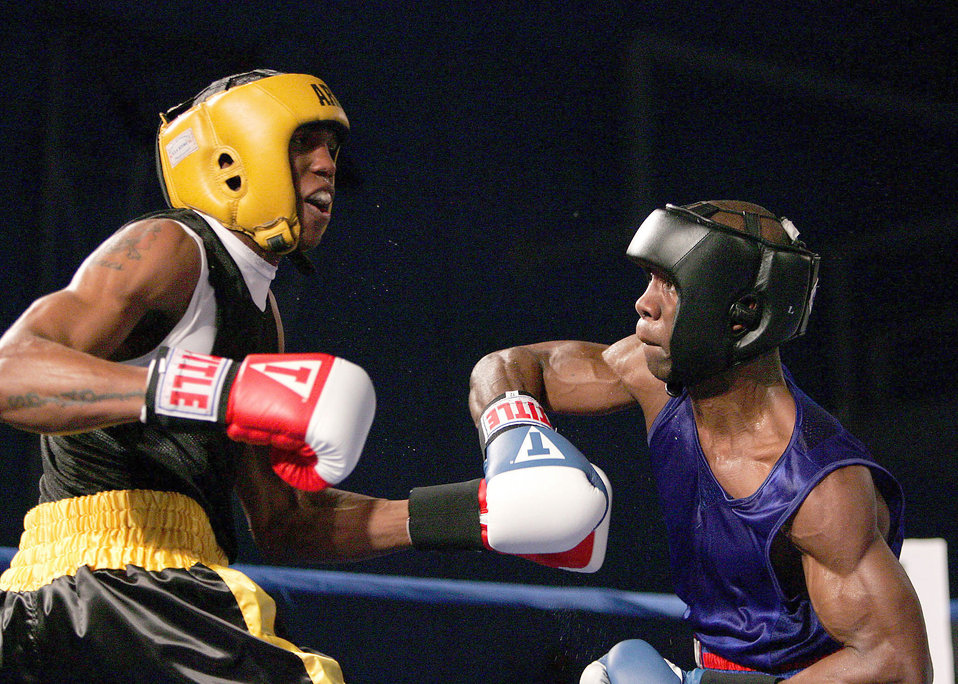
Armed Forces Boxing Championships

Army Spc. Zacchaeus Hardrick (left) defeated Air National Guardsman Gary Griffin during their Armed Forces Boxing Championships bout Feb. 15, 2011, at Lackland Air Force Base, Texas.